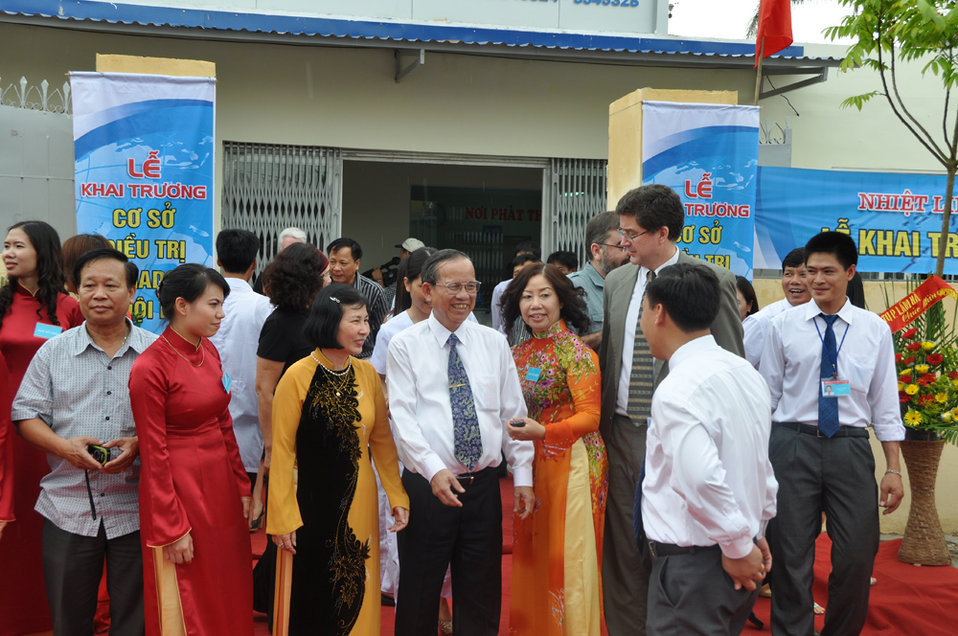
Co-pay Methadone Treatment Center Opens in Hai Phong on June 18, 2011

Deputy Prime Minister Truong Vinh Trong.